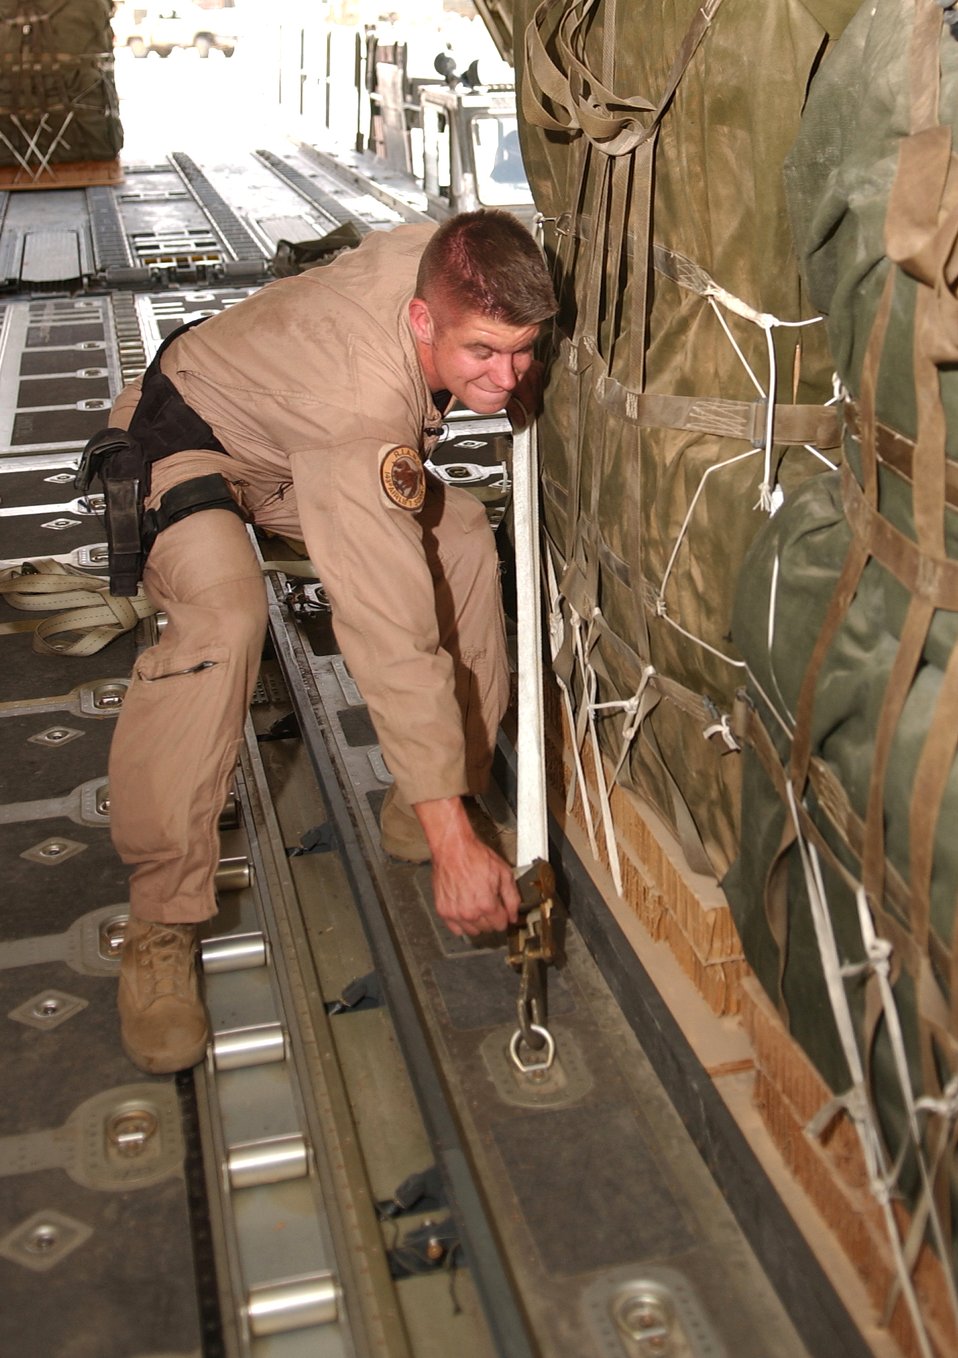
Combat airdrop

SOUTHWEST ASIA -- Tech. Sgt. Kyle Gurnon secures a container delivery system bundle to the aircraft locks in a C-130J Hercules recently. The first-ever combat airdrops for the new J-model transport, twelve bundles were dropped in support of an Army air assistance request for troop re-supply and civic assistance in the vicinity of Kandahar, Afghanistan. Sergeant Gurnon is a loadmaster with the Rhode Island Air National Guard's 143rd Air Wing.